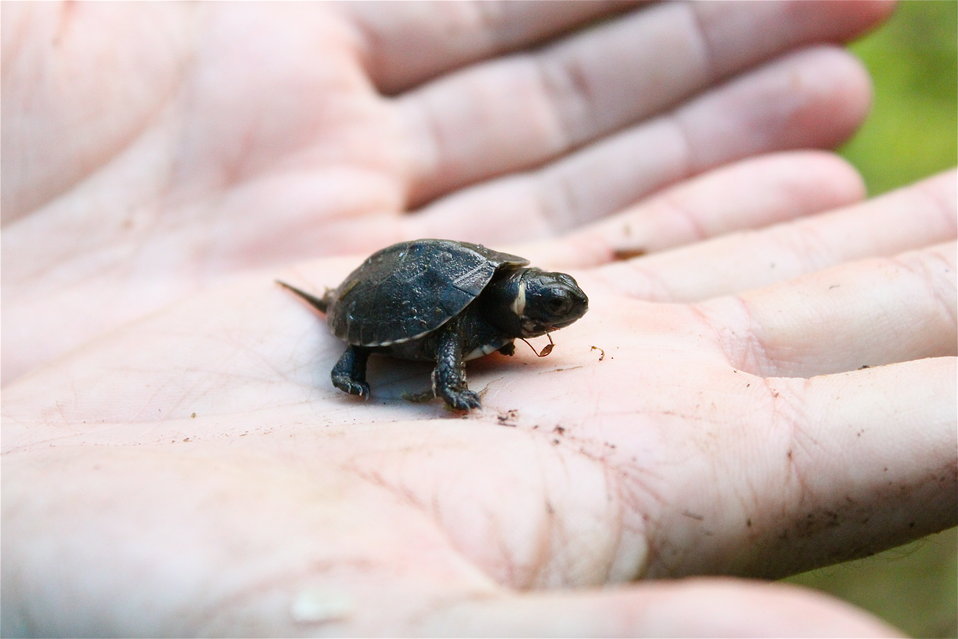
Photo of the Week - Bog Turtle (NJ)

Photo of the Week - 1/13/14

Did you know the Northeast is home to North America's smallest turtle, the threatened bog turtle? Susi von Oettingen, endangered species biologist with the U.S. Fish and Wildlife Service, interviewed on Fox Connecticut Wednesday (Jan. 15, 2014), highlighting the recent 40th anniversary of the Endangered Species Act and a handful of threatened and endangered species that occur in Connecticut, including the threatened bog turtle, piping plover, and Puritan tiger beetle, as well as recovered species like the bald eagle and peregrine falcon. See the interview; video.foxct.com?ndn.trackingGroup=91060&ndn.siteSecti...

www.fws.gov/northeast

redit: Rosie Walunas/USFWS